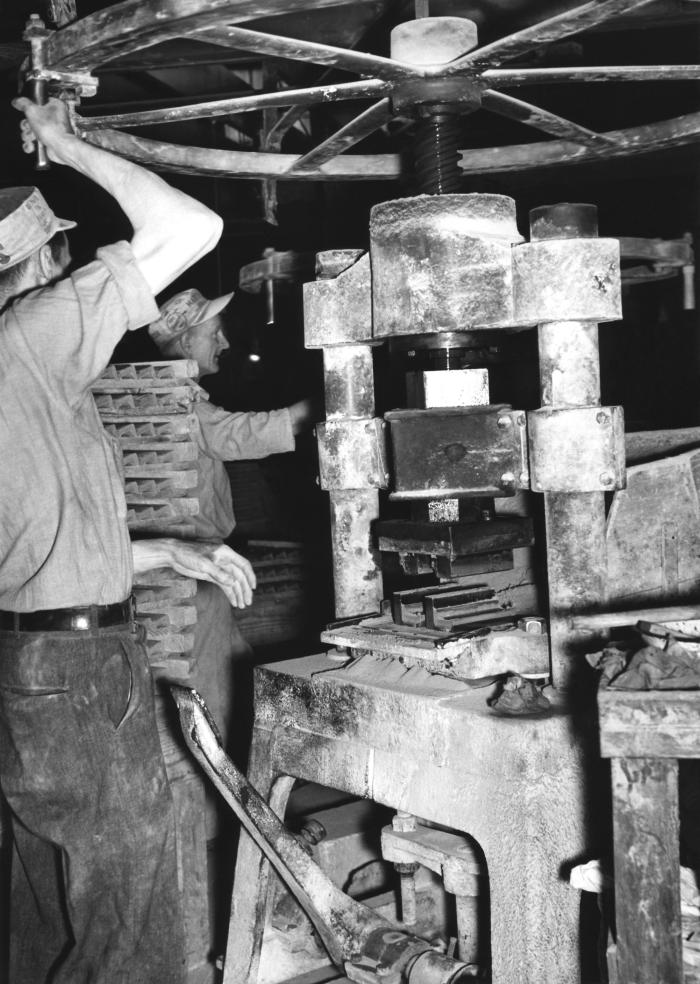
Provided by the Center for Disease Control's (CDC), National Institute for Occupational Safety and Health (NIOSH), this historic image depicted two male industrial workers who were inside a West Virginia tile-making factory stationed at the tile press. Pressing tiles involved the application of pressure to dried clay, which often released airborne silicate particles. In so doing, these workers were prone to inhaling these particulates, which lead to the chronic pulmonary disease known as pneumoconiosis, or silicosis, or more commonly known as 'grinders' disease', characterized by the formation of nodular fibrotic changes in the lungs. Note that neither man was wearing a filtered breathing mask, thereby, increasing their chances of contracting silicosis. The image was published in the 'Public Health Bulletin', No. 244, 1939.